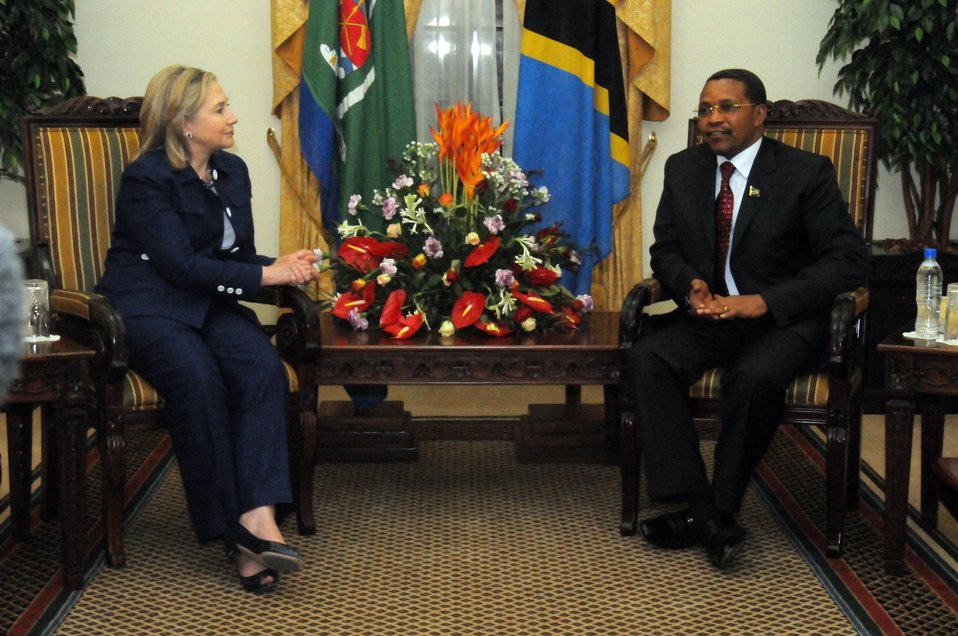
Secretary Clinton Meets With Tanzanian President Kikwete

U.S. Secretary of State Hillary Rodham Clinton, left, holds a bilateral meeting with Tanzanian President Jakaya Kikwete, right, at the State House in Dar es Salaam, Tanzania, on June 13, 2011.